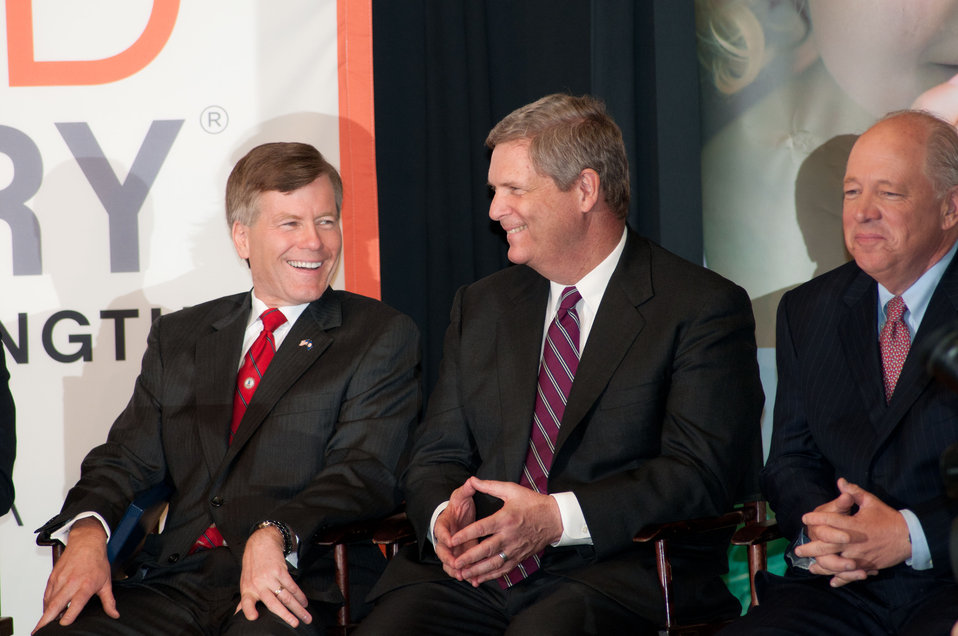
U.S. Department of Agriculture Secretary Tom Vilsack (center), Virginia Governor Bob McDonnell (left) and Share Our Strength founder and Executive Director Billy Shore are amused by the Super Sprowtz, a team of super-powerful vegetable super hero puppet characters during their introduction of Agriculture Secretary Tom Vilsack for the launch of the Virginia No Kid Hungry Campaign, at Barcroft Elementary School in Arlington, VA, on Tuesday, June 7, 2011. Vilsack said, “ We know our strength comes from out partnerships…” Campaign partners include Share our Strength, the Federation of Virginia Food Banks, corporate partners, education leaders, government agencies and community organizations. The Virginia Summer Meals for Kids Program is funded by the USDA and provides free summer meals at hundreds of sites across the Commonwealth of Virginia, but according to a new report released today by the Food Research and Action Center, more than 80 percent of those eligible do not participate. Governor McDonnell announced and stressed that all parents who want free meals for their kids in need, can simply call 211 to find a summer meals site near them.